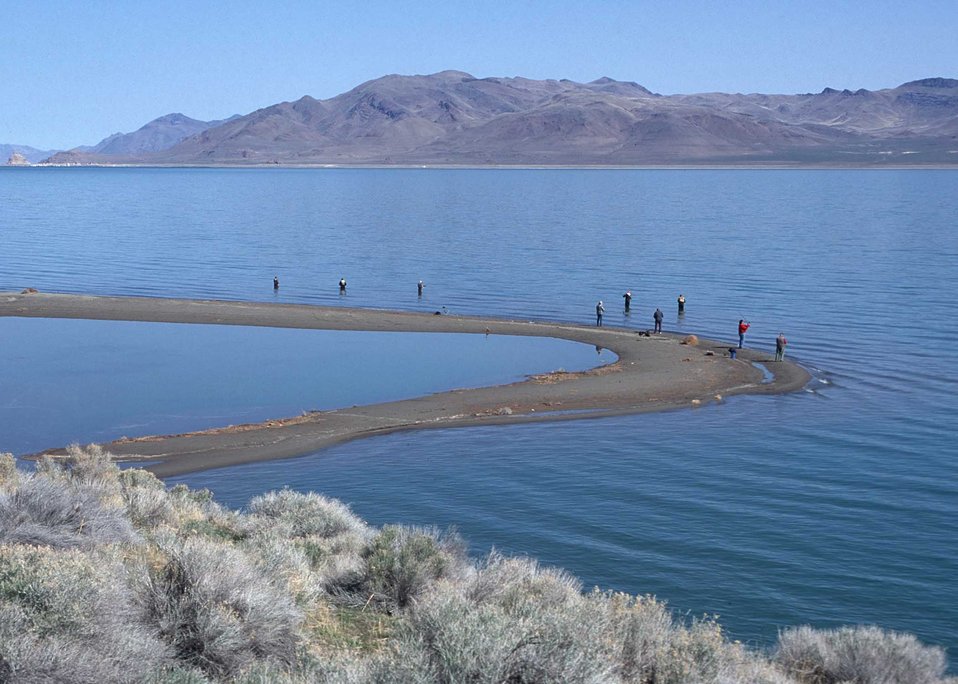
fishing on Pyramid Lake Indian Reservation, Washoe County, NV.